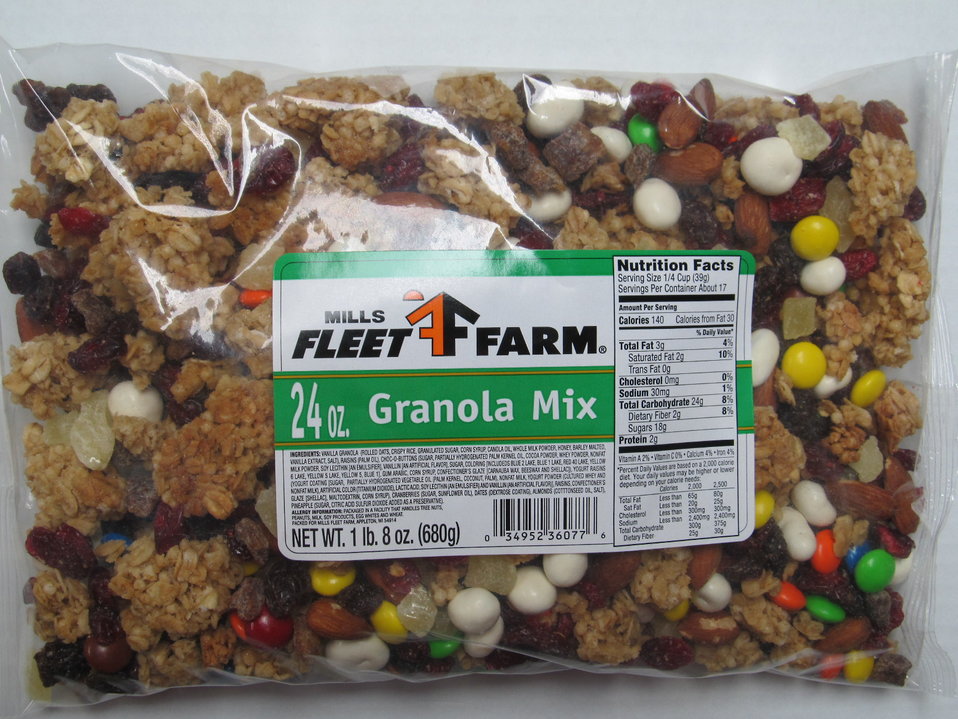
RECALLED - Yogurt Raisins and Granola Mix

December 22, 2011 - Eillien's Candies, Inc. Issues a Voluntary Recall of Select Candy Items Due to Possible Health Risk.